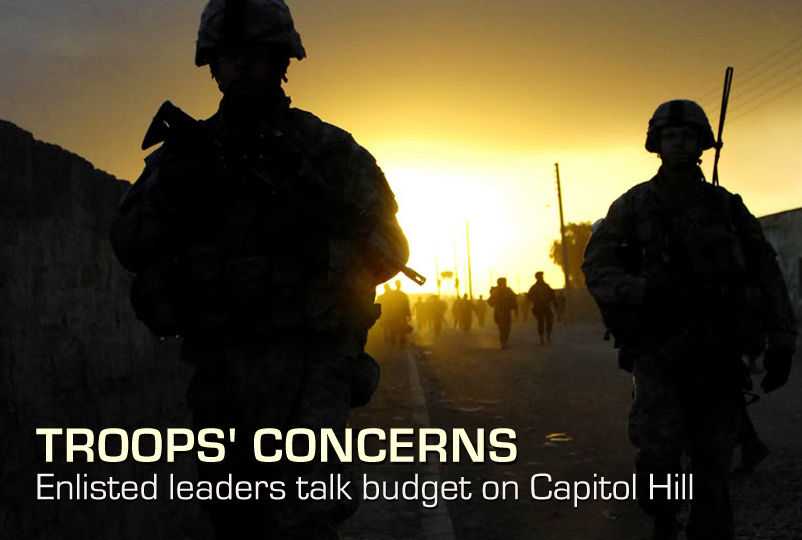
Troops' Concerns